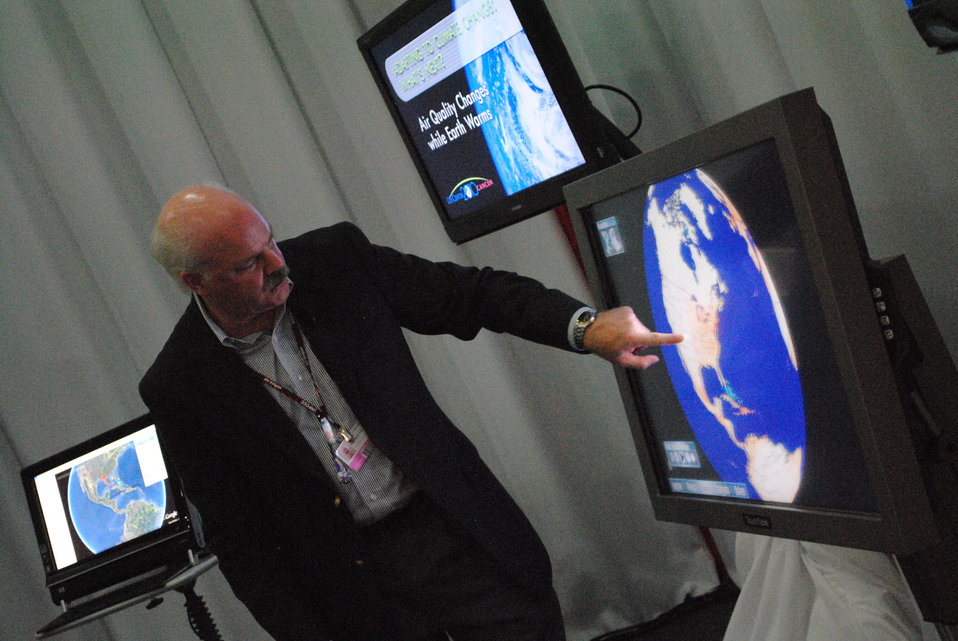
Dave Jones Demonstrates How Climate Change Affects the United States

Dave Jones, President and CEO of Storm Center Communications, Inc., uses the Envirocast Vision Touch Table to demonstrate how climate change is affecting the United States in the Living Room of the U.S. Center at COP-16 in Cancun, Mexico, on November 30, 2010.